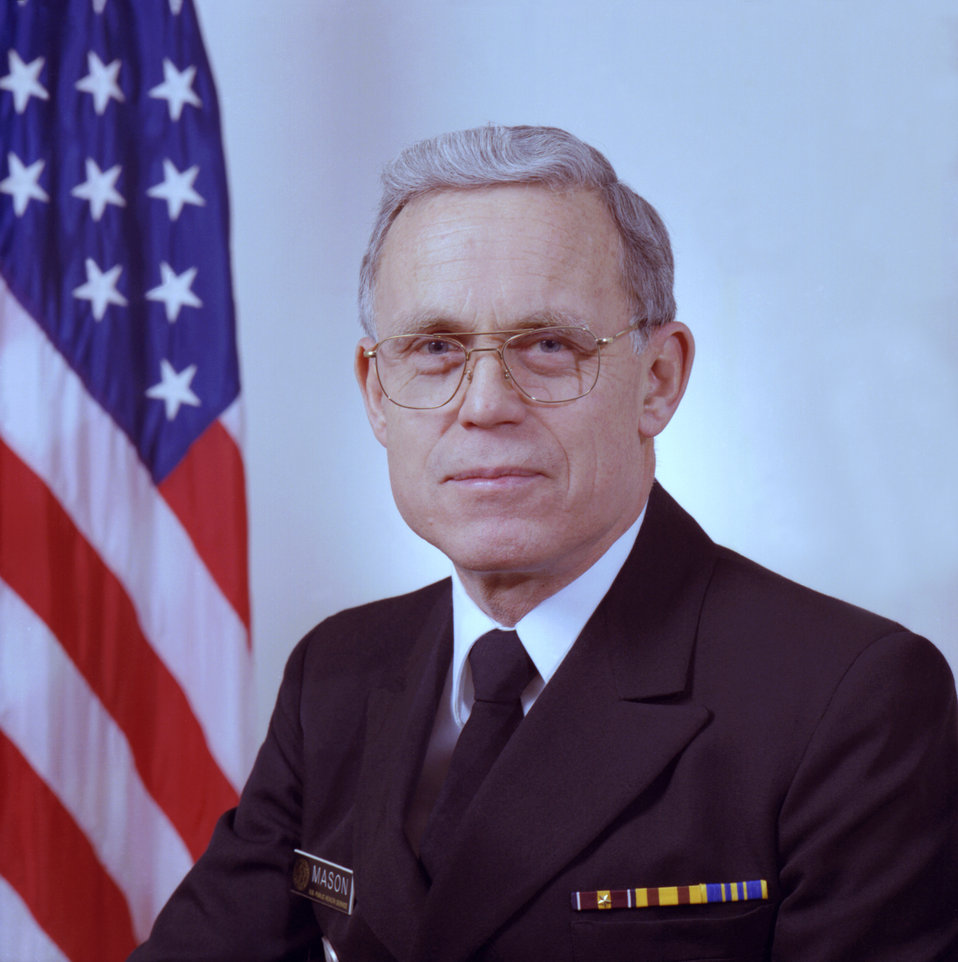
This was a photographic portrait of former Centers for Disease Control (CDC) Director, James O. Mason, M.D., M.P.H. Dr. Mason was appointed to the organization's Directorship in 1984 by then former President Ronal Reagan, and served as its Director from 1983 until 1989. Dr. Mason was also a former Assistant Secretary for Health, and as such, oversaw 'the United States Public Health Service (USPHS) Commissioned Corps, providing it with strategic and policy direction.'